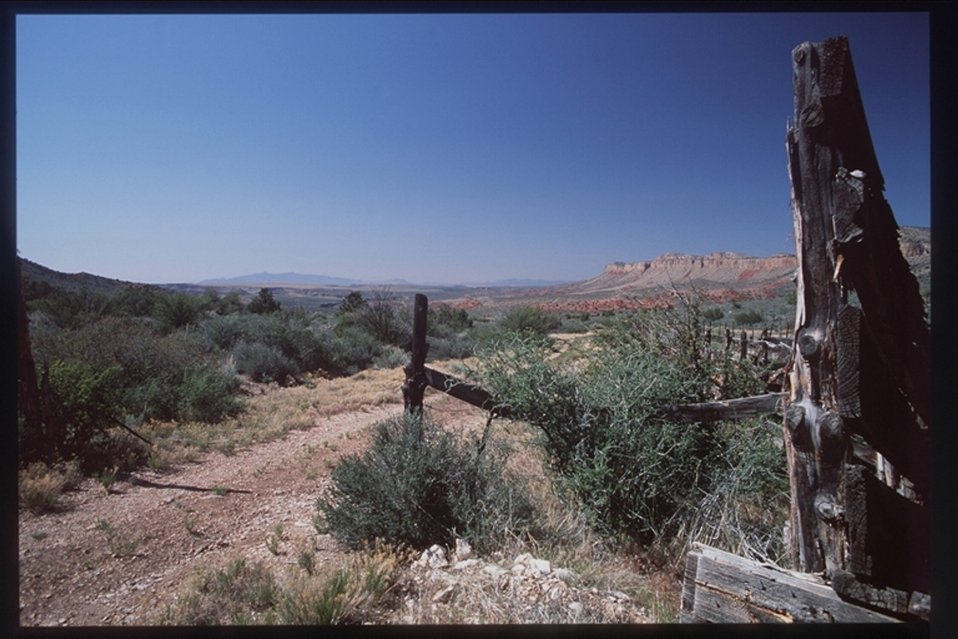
A small fence runs along a road in the Grand Canyon Parashant National Monument.